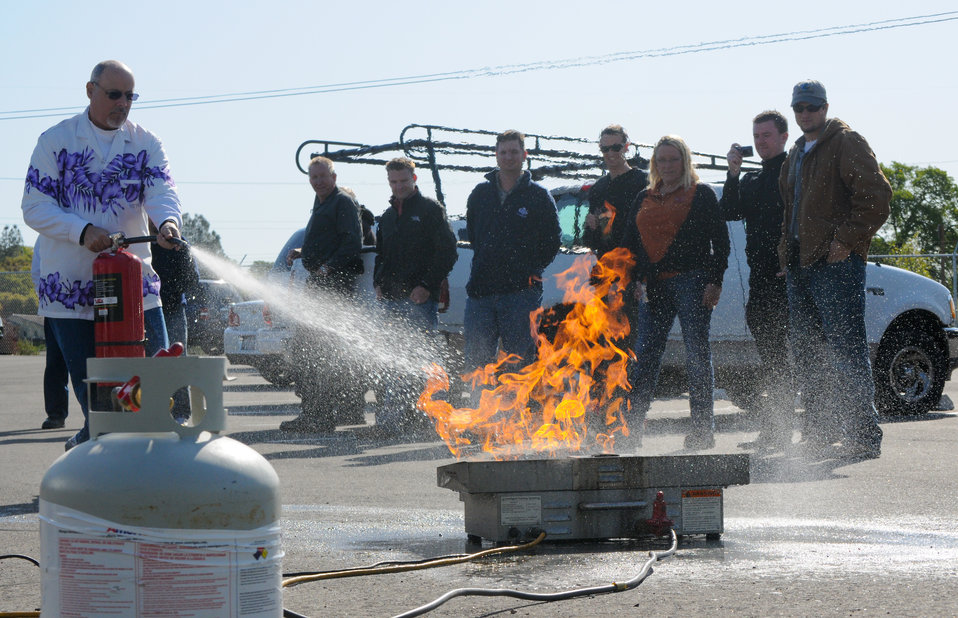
Fred douses a ring of fire in Folsom, Calif.

Fred Strickland, an engineer with the U.S. Army Corps of Engineers Sacramento District, douses a ring of propane fire during a training exercise April 7, 2012, in Folsom, Calif. Strickland and nearly 20 Corps employees participated in yearly fire extinguisher safety training, mandated by Occupational Safety and Health Administration, and conducted by the district’s safety office. The training included a video presentation, group discussion, followed by a timed live-fire exercise.